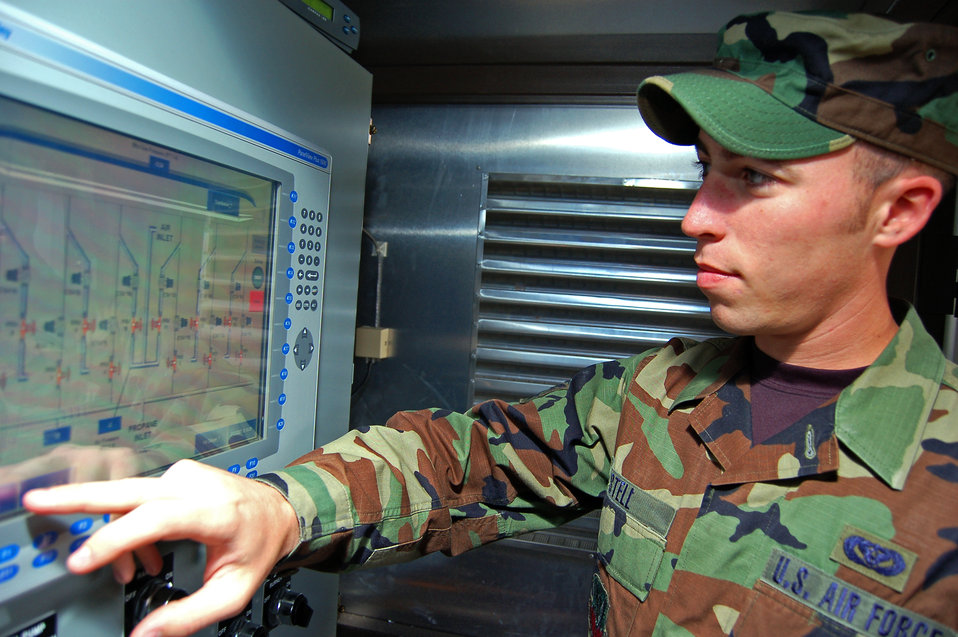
Propane plant fuels utility alternatives for Moody

Senior Airman William Stell adjusts the water tank temperature in the heat exchanger of the new propane air-mix plant Feb. 12 at Moody Air Force Base, Ga. The $865,000 plant converts liquid propane into a substitute for natural gas during high-price billing periods. Airman Stell is a 23rd Civil Engineer Squadron liquid fuels journeyman.